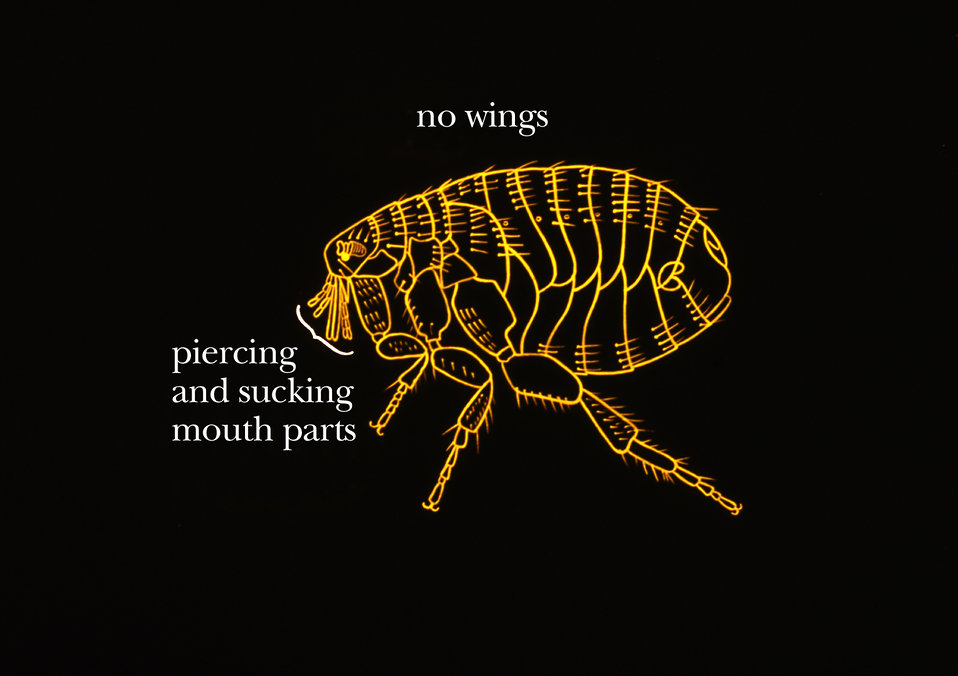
This illustration of a flea shows two features, which distinguish this disease vector from other insects.